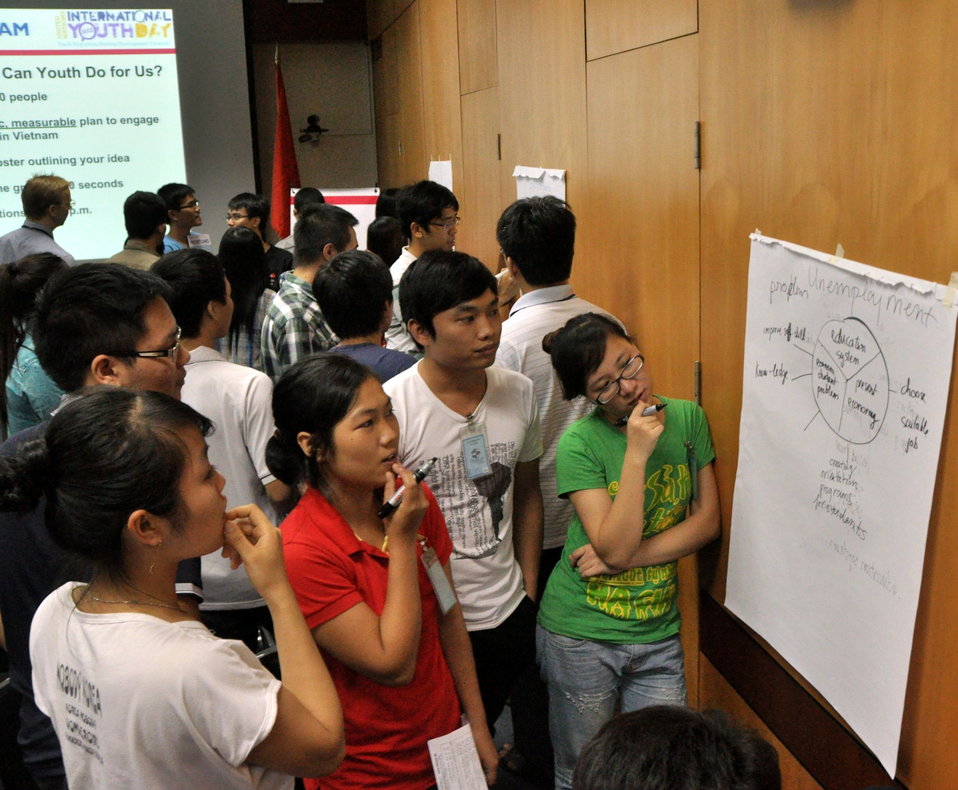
International Youth Day 2013: USAID hosts a lively discussion and group exercise on how youth can join in to advance development

Hanoi, August 12, 2013.